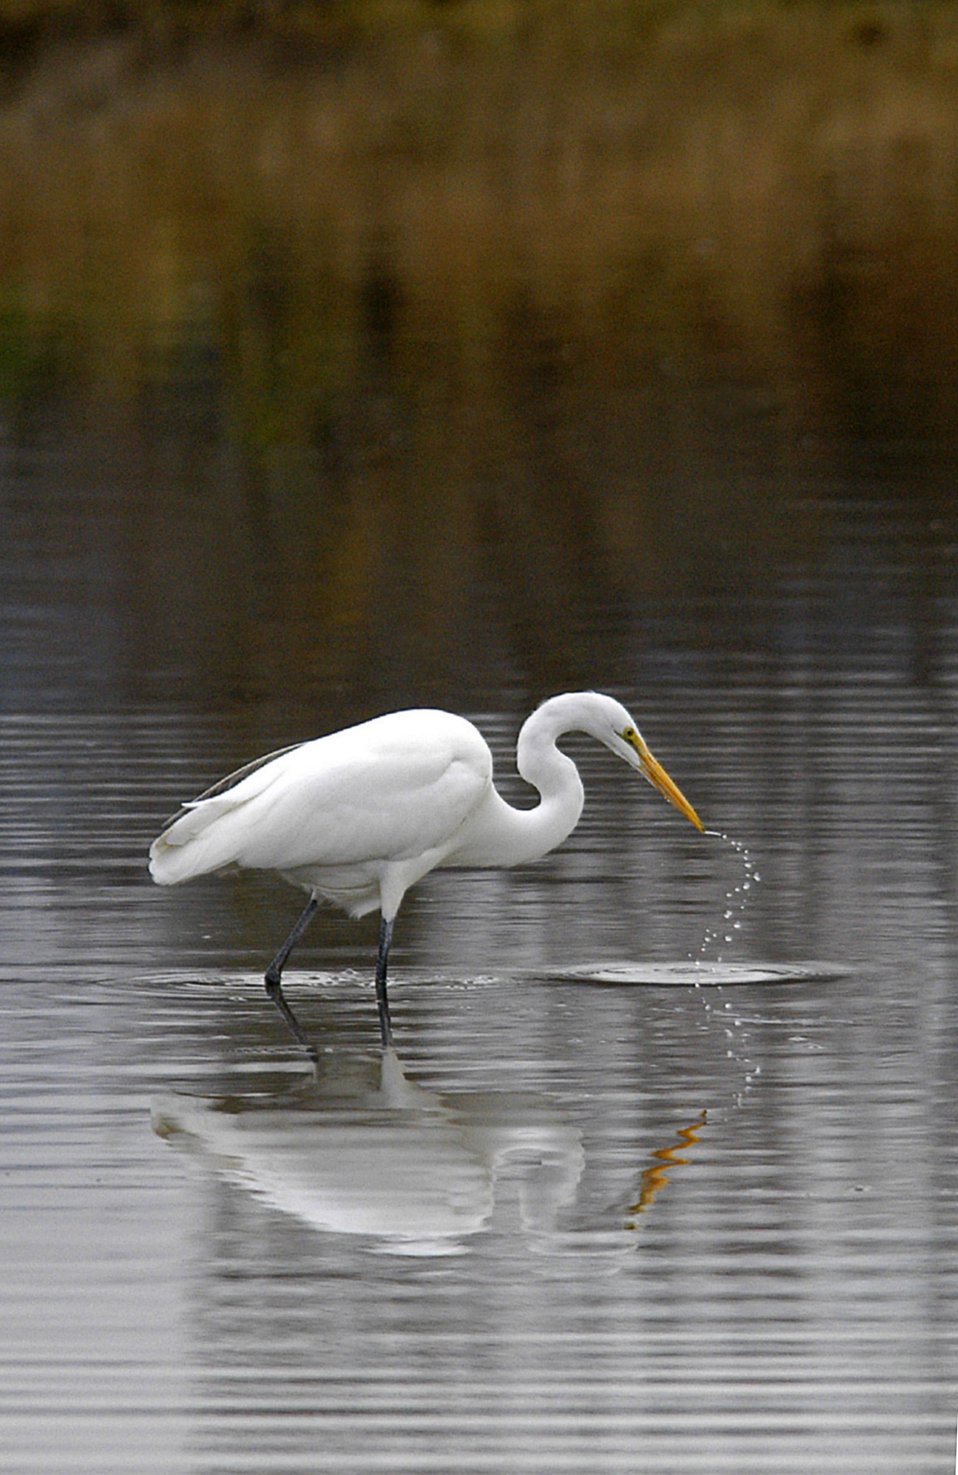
Egret fishing in a pond near he Applegate River. Terry Tuttle, Medford Wildlife2